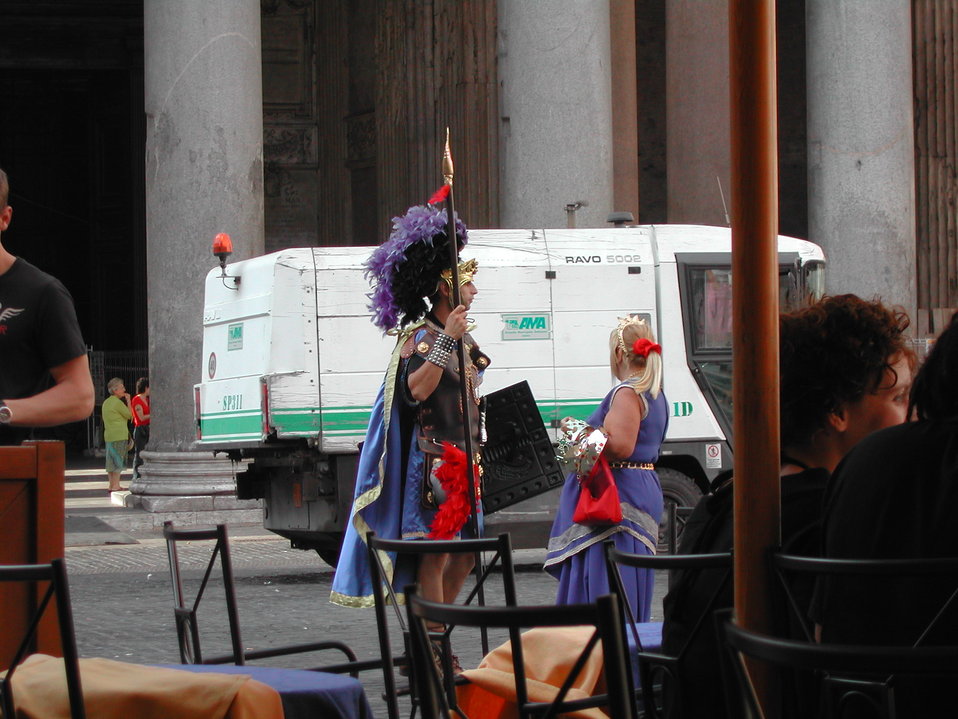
040730 comparse al pantheon 01